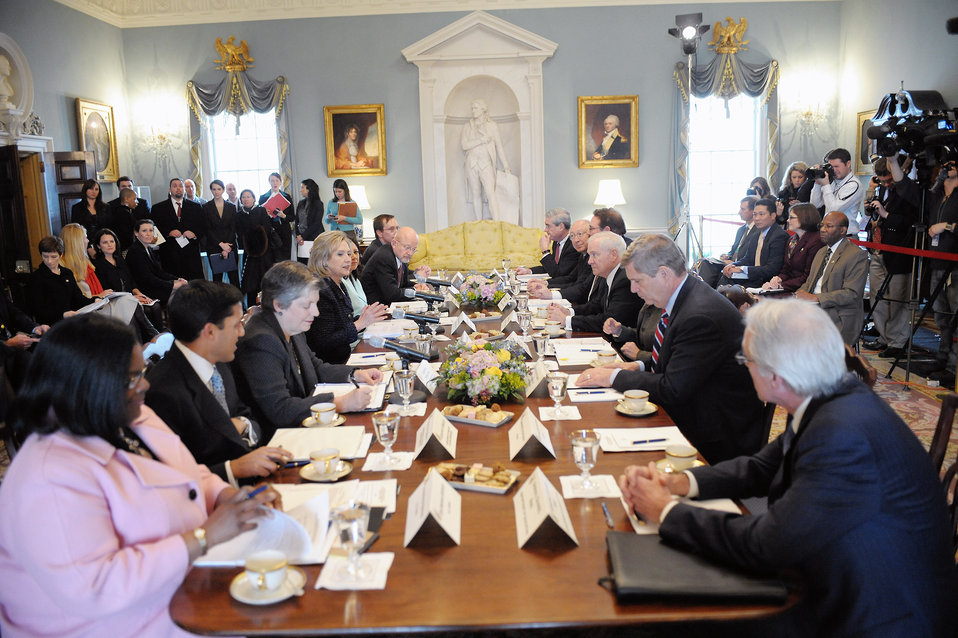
Secretary Clinton Chairs the Annual Meeting of the President's Interagency Task Force To Monitor and Combat Trafficking in Persons

U.S. Secretary of State Hillary Rodham Clinton chairs the annual meeting of the President's Interagency Task Force To Monitor and Combat Trafficking in Persons with U.S. Secretary of Labor Hilda L. Solis, U.S. Attorney General Eric H. Holder, Jr., U.S. Secretary of Homeland Security Janet Napolitano, U.S. Under Secretary of State for Democracy and Global Affairs Maria Otero, and U.S. Ambassador-at-Large Luis CdeBaca, at the U.S. Department of State in Washington, D.C., on February 1, 2011.